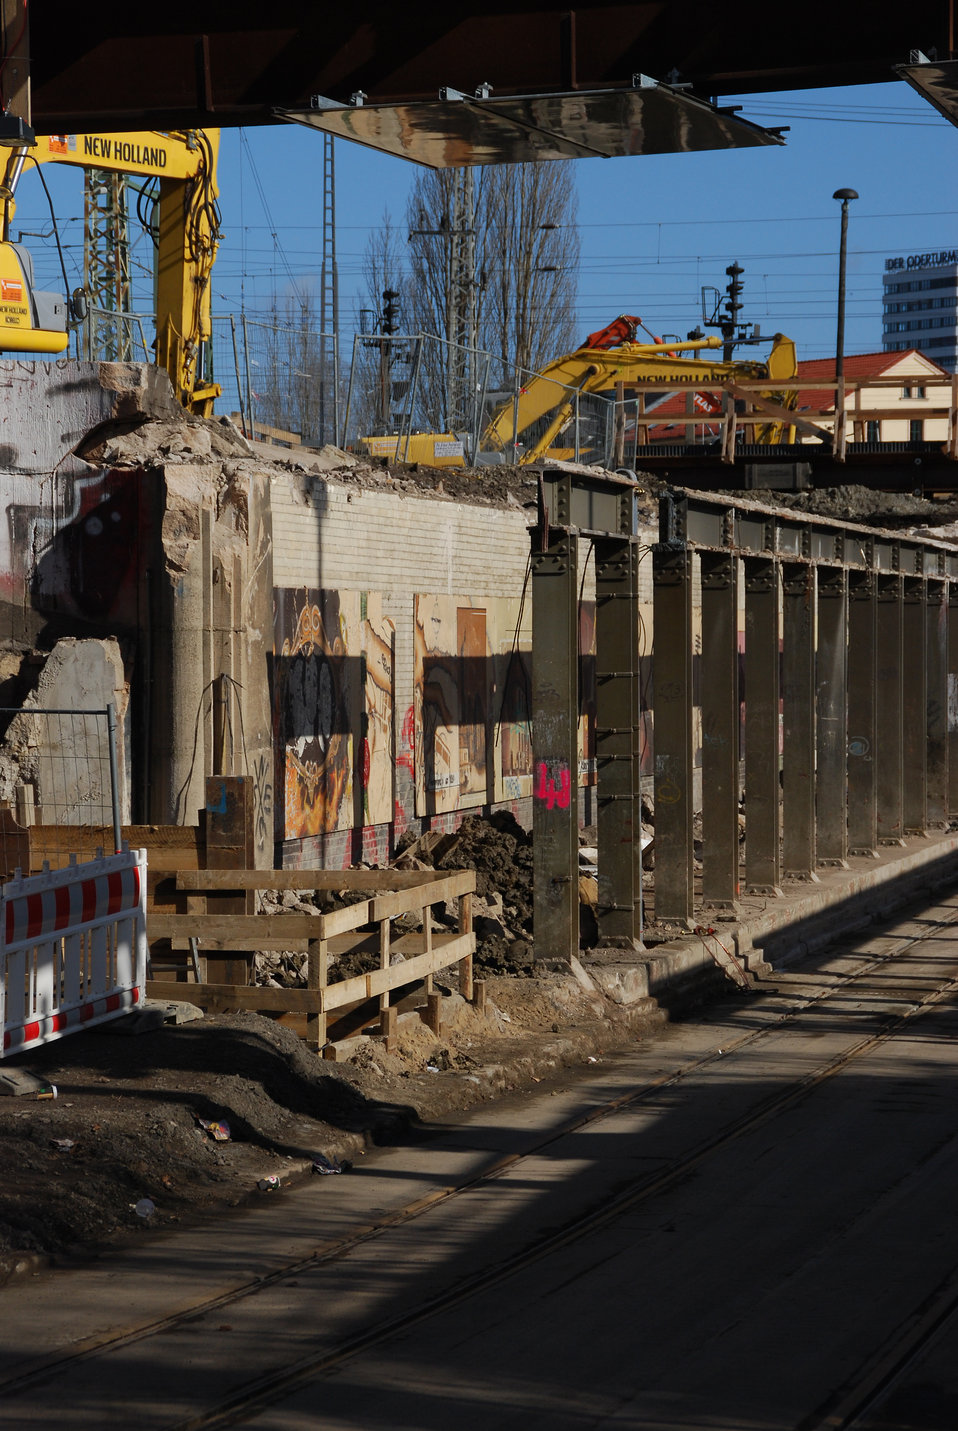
Abriss Bahnhofstunnel Frankfurt (Oder)